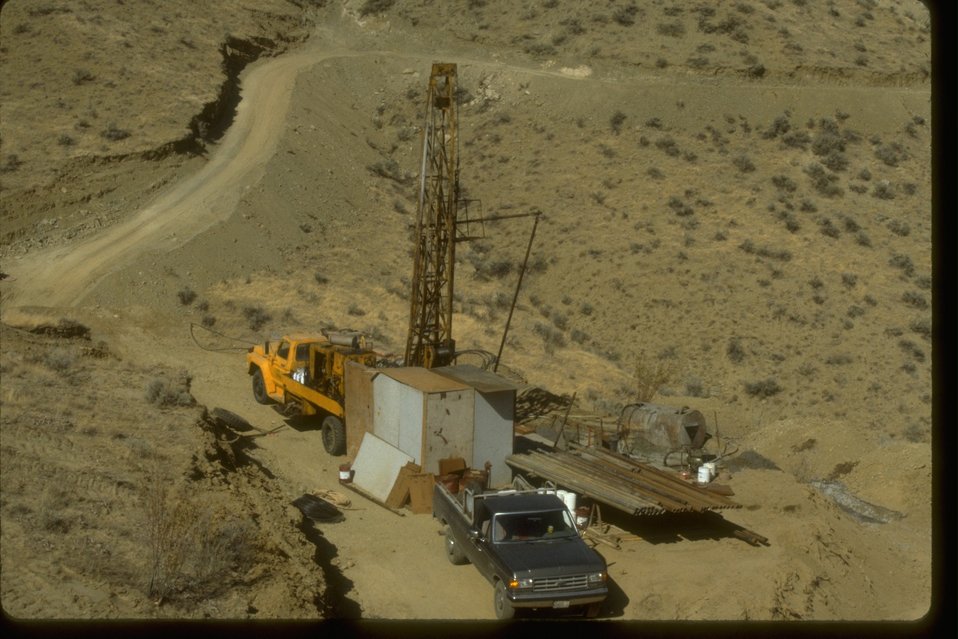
Asamera Minerals gold exploration drill rig on BLM lands near Wenatchee.